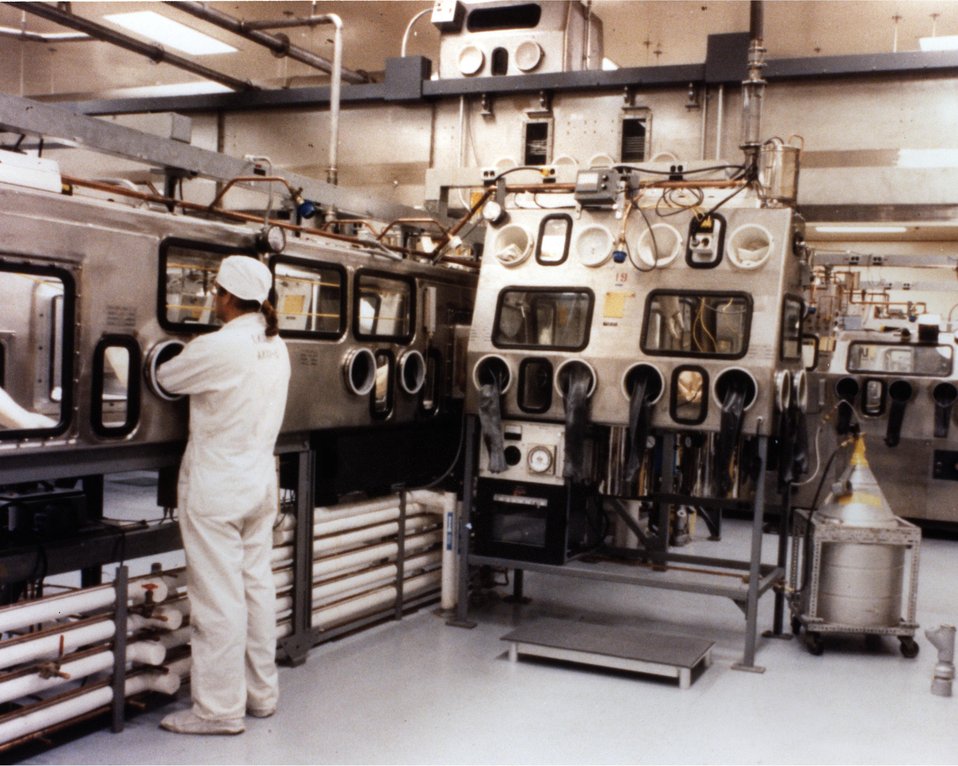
OVERALL VIEW OF GLOVE BOX ROOM.

THE GLOVE BOXES HAVE BOLT-ON, VACUUM-TIGHT WINDOWS THAT HAVE LEAD RADIATION SHIELDS BETWEEN THE GLOVE PARTS. INERT PURIFICATION/RE-CIRCULATION SYSTEMS ARE BENEATH THE GLOVEBOXES AND THE BUBBLIER RELIEF VALVES LEADING TO THE EXHAUST PLENUM ARE ON TOP OF THE BOXES. INSIDE THE GLOVE BOXES ARE RECORDERS FOR THE CONTINUOUS ANALYSIS OF THE MOISTURE AND OXYGEN CONTENTS OF THE INTERIOR ATMOSPHERE.